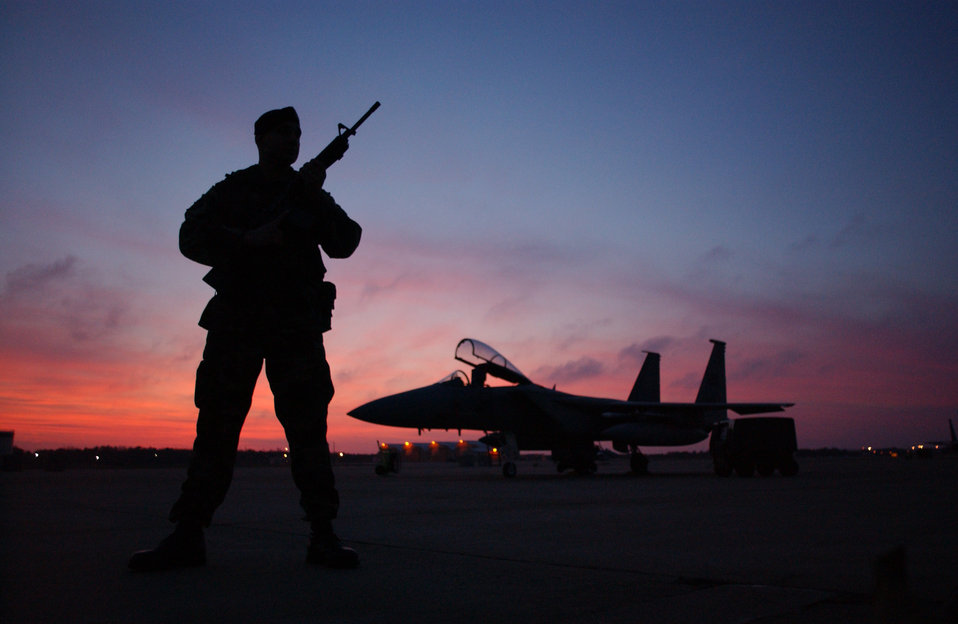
Winter sunset

CAPE COD, Mass. -- Staff Sgt. Nassim Rizvi guards an F-15 Eagle on the flightline at Otis Air National Guard Base here during a warm winter sunset Dec. 23. Sergeant Rizvi is assigned to the 102nd Fighter Wing Security Forces.